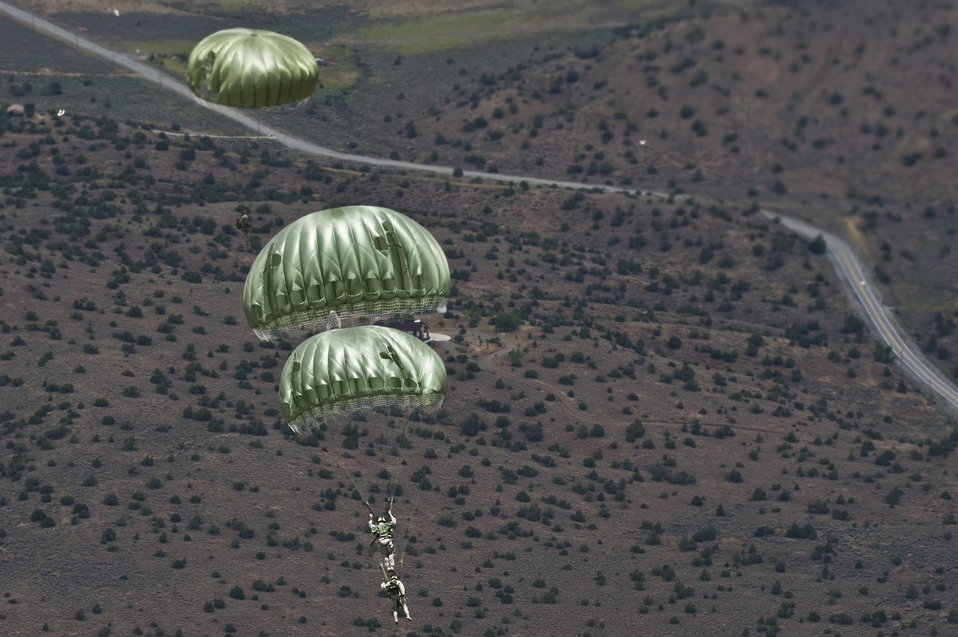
Airdrop and sling-load training

Members of the 820th RED HORSE squadron drop into a landing zone at the Senator Harry Reid Readiness and Training Center near Stead, Nev., June 28, 2011, during airdrop and sling-load training.